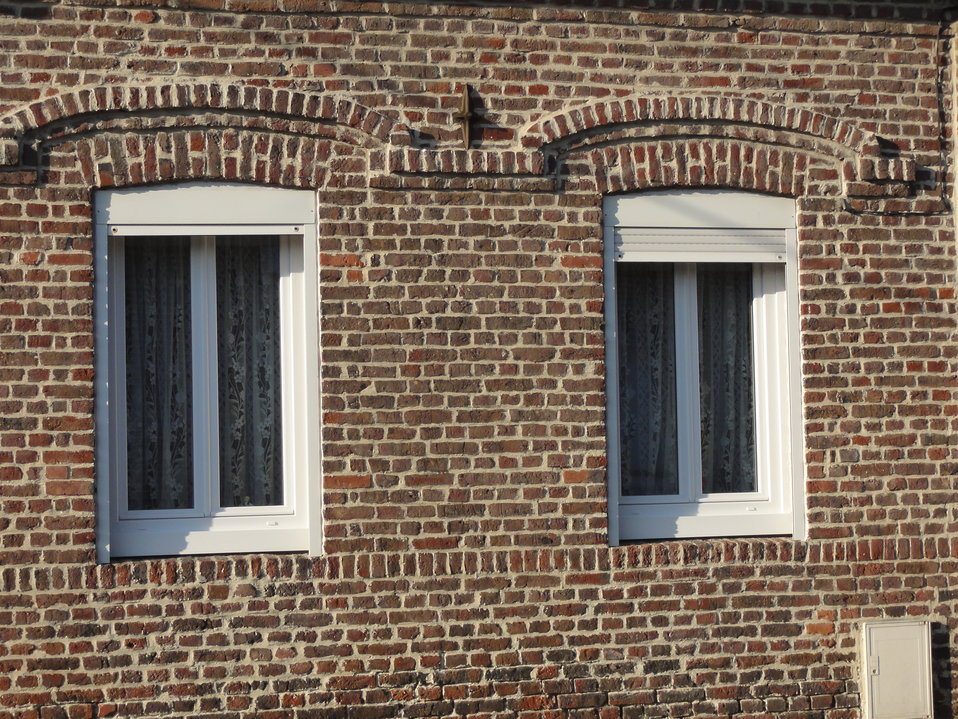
Fran√ßais†: Cit√©s de la Fosse La Sentinelle de la Compagnie des mines d'Anzin, La Sentinelle, Nord, Nord-Pas-de-Calais, France.